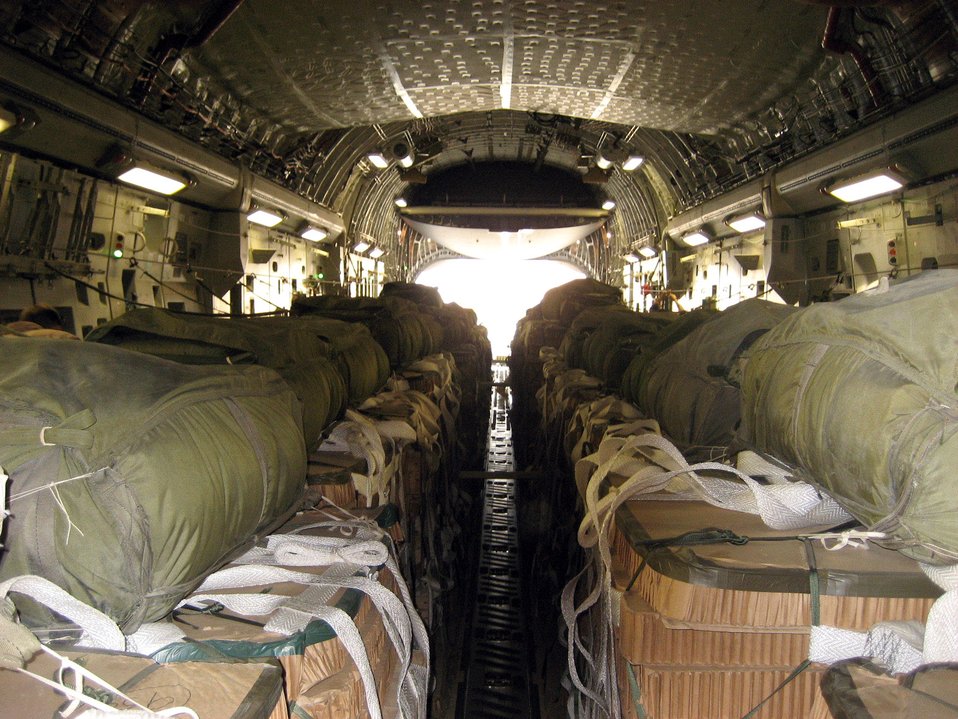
Airpower summary for May 10, 2007

Pallets of ammunition wait to be airdropped from a C-17 Globemaster III. The load was dropped to Soldiers in Afghanistan engaged in combat with anti-coalition forces. Airdrops provide vital supplies to coalition forces in remote areas that can not be safely supplied by ground transportation.